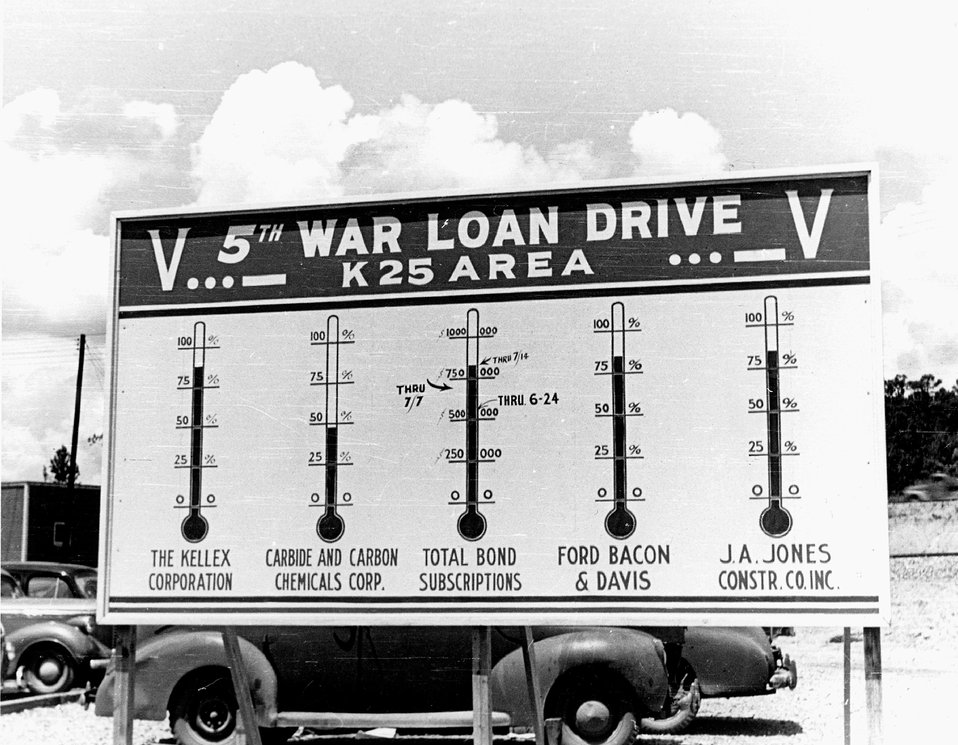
5th War Load Drive. c. 1944